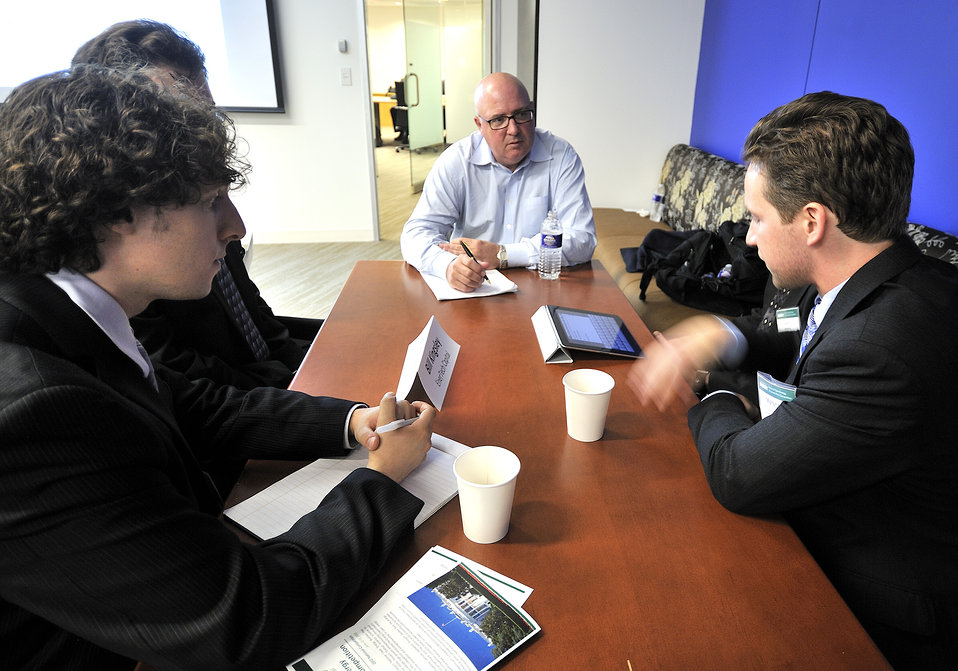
National Clean Energy Business Plan Competition

The National Clean Energy Business Plan Competition inspired nearly 300 university teams across the country to create new businesses to commercialize promising energy technologies developed at U.S. universities and the National Laboratories.